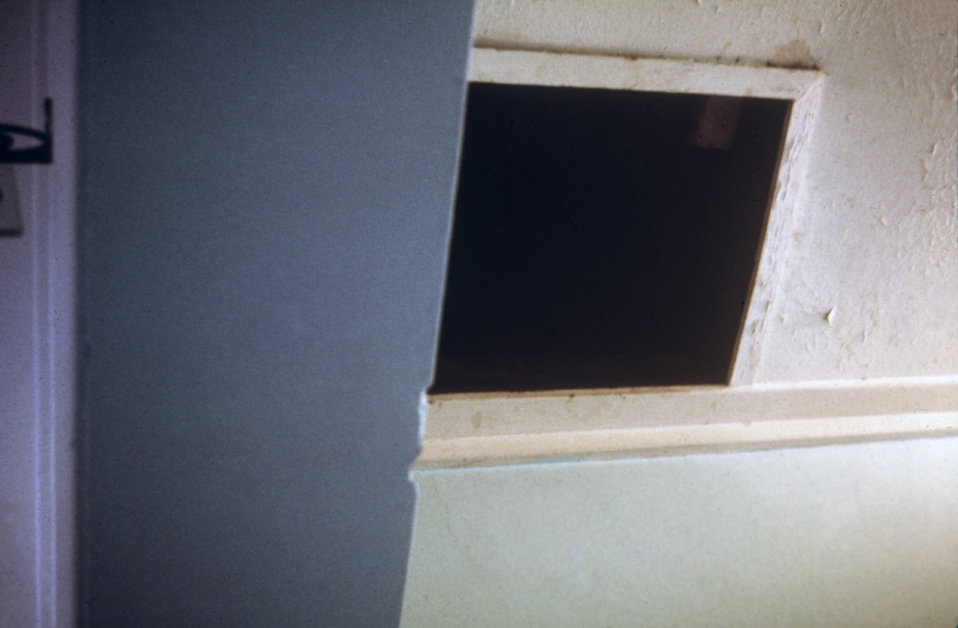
This was an attic entrance in a student hostel in Salisbury, Rhodesia, i.e., now Zimbabwe, during a 1975 Marburg investigation.